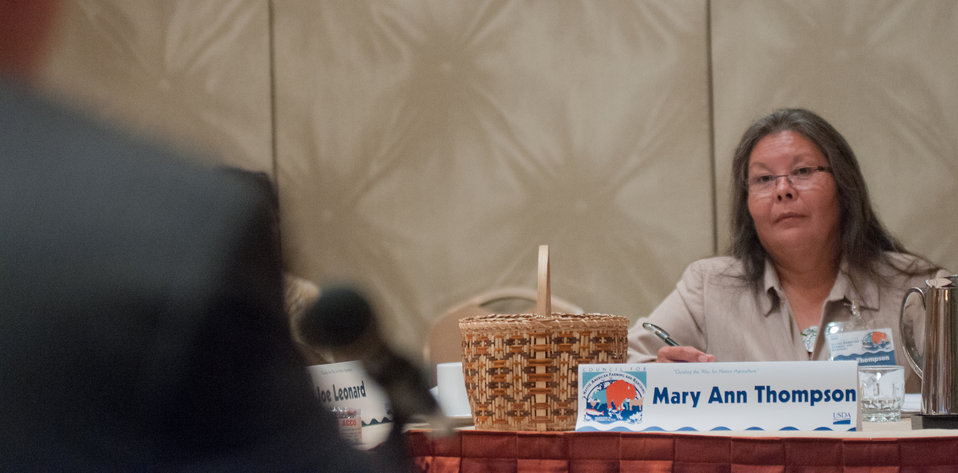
Mary Ann Thompson, rancher and farmer of the Eastern Band of Cherokee Indians in Cherokee, NC listens to Agriculture Secretary Tom Vilsack, left, respond to her question about marketing, during the U.S. Department of Agriculture's (USDA) Council for Native American Farming and Ranching (CNAFR). CNAFR was created to advise the Secretary on ways to eliminate barriers to participation for Native American Farmers and Ranchers in USDA programs. The Council was established as part of the Keepseagle settlement, and is conducted under the oversight of USDA's Office of Tribal Relations, which is part of the Office of the Secretary of Agriculture. Also in attendance is The Director of Tribal Relations Leslie Wheelock, Agriculture Assistant Secretary for Civil Rights Joe Leonard, Jr. Ph.D., Farm Services Administration Administrator Juan M. Garcia and Deputy Administrator for Farm Loans Programs Chris Beyerhelm.